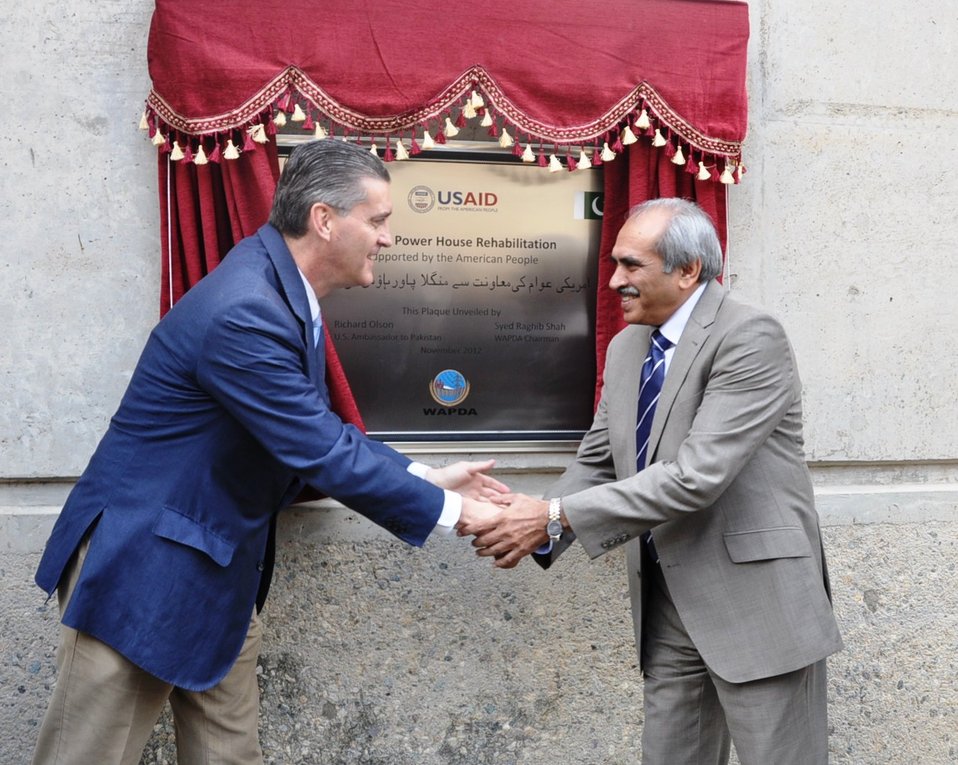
U.S. Ambassador Richard Olson and Wapda Chairman Raghib Shah unveiling the plaque